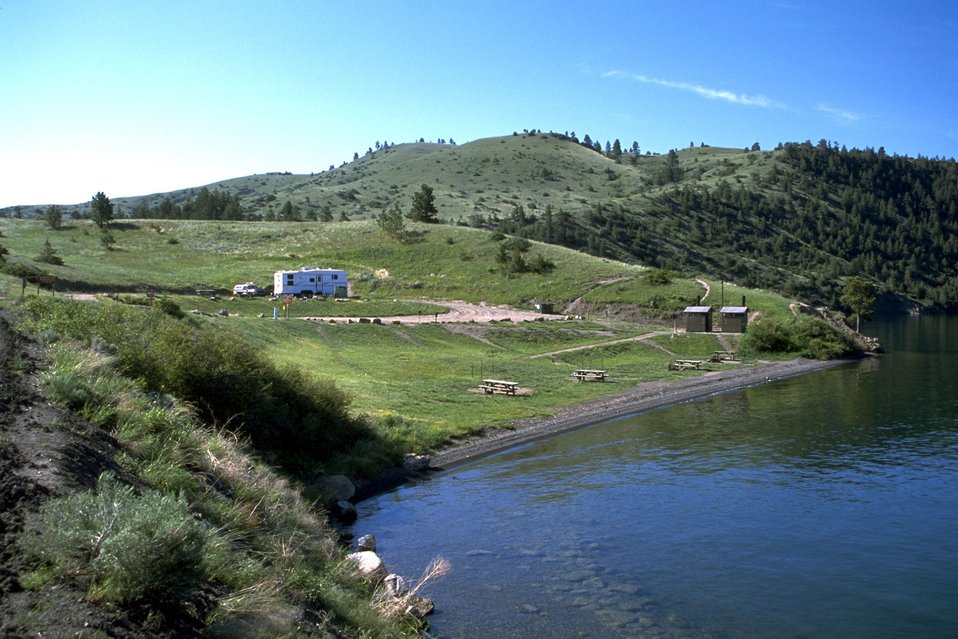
Departure Point Campground at Holter Lake